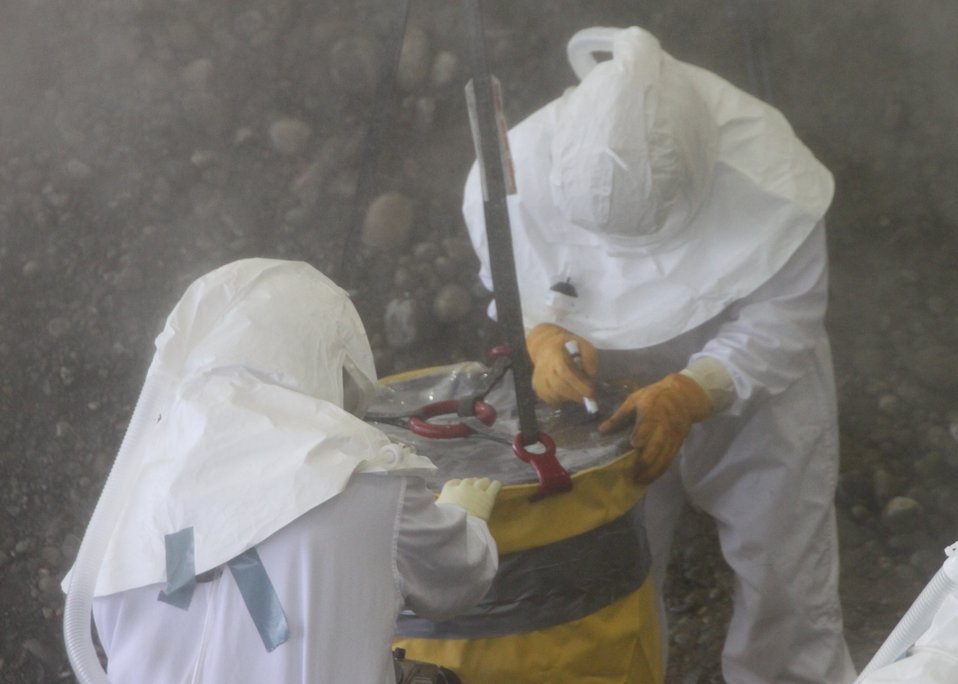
Hanford Richland Waste Cleanup

A container of waste is excavated from an underground storage trench at the Hanford Site. Recovery Act workers place the container into protective covering and it is hoisted from the trench and staged adjacent to the trench for processing.